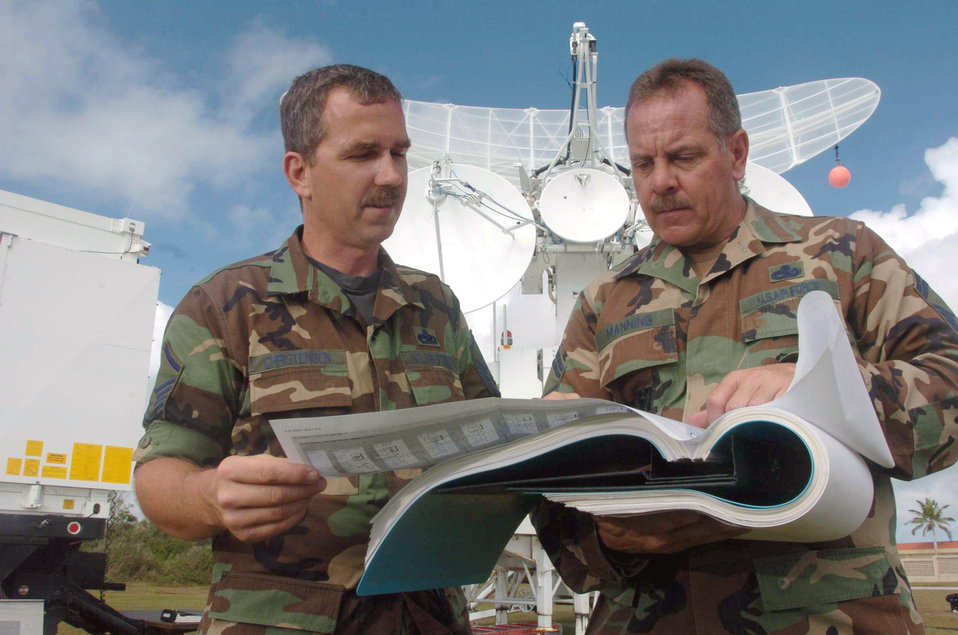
Guard helps train B-52 crews

ANDERSEN AIR FORCE, Guam -- Senior Master Sgt. Mike Manning (right) and Master Sgt. Patrick Christensen use a manual to calibrate a Multiple Threat Emitter System here. The system is a computer-controlled, multiple emitter system designed to transmit simulated threat signals. Both sergeants are radar maintainers from the 266th Range Squadron at Mountain Home Air Force Base, Idaho.